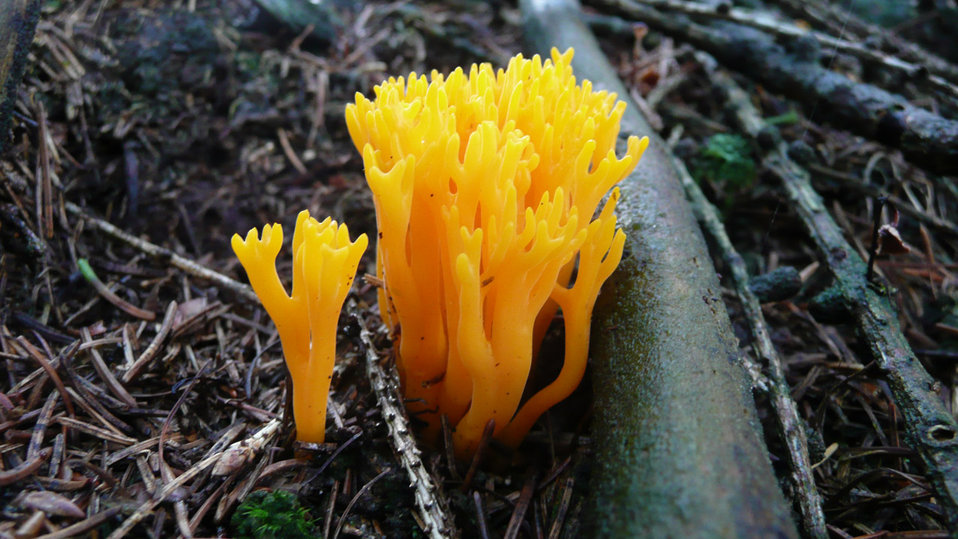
Mushrooms

Yellow mushroom.